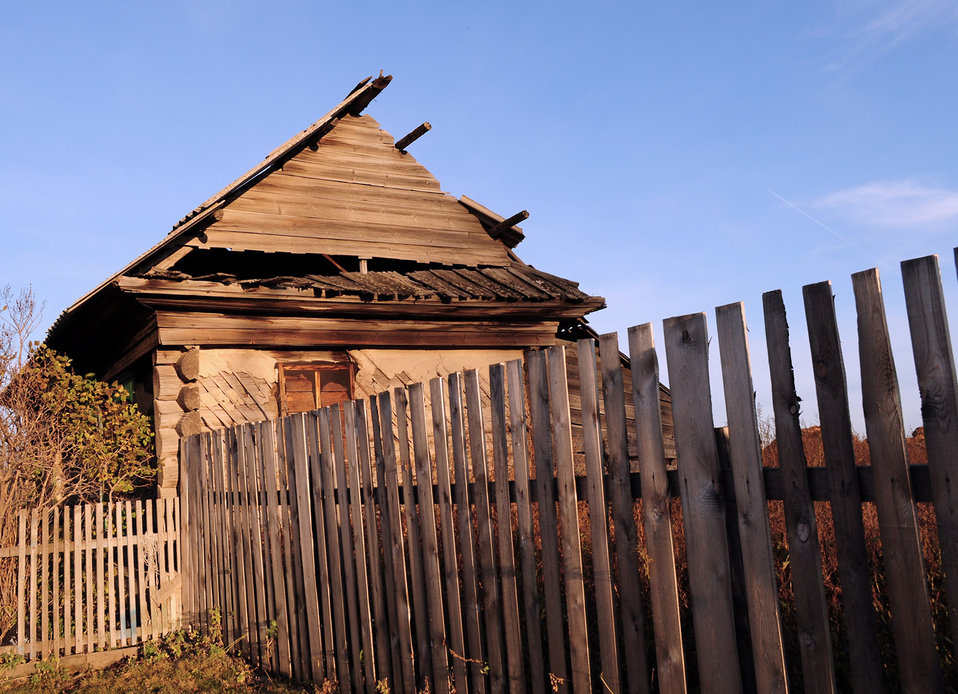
Old house 2

The old house lit up by the sun.